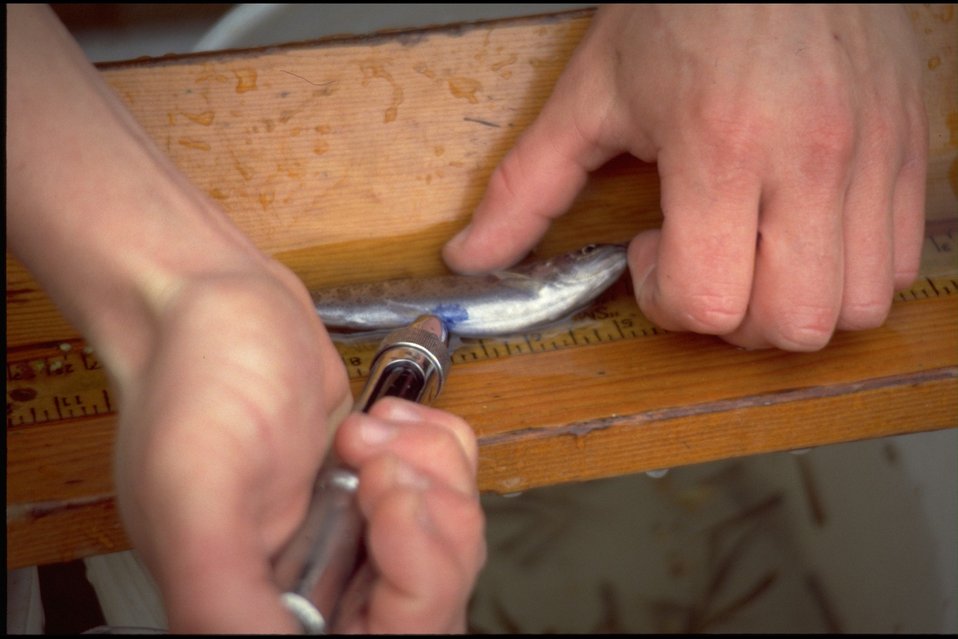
Wolf Creek Fish Count.